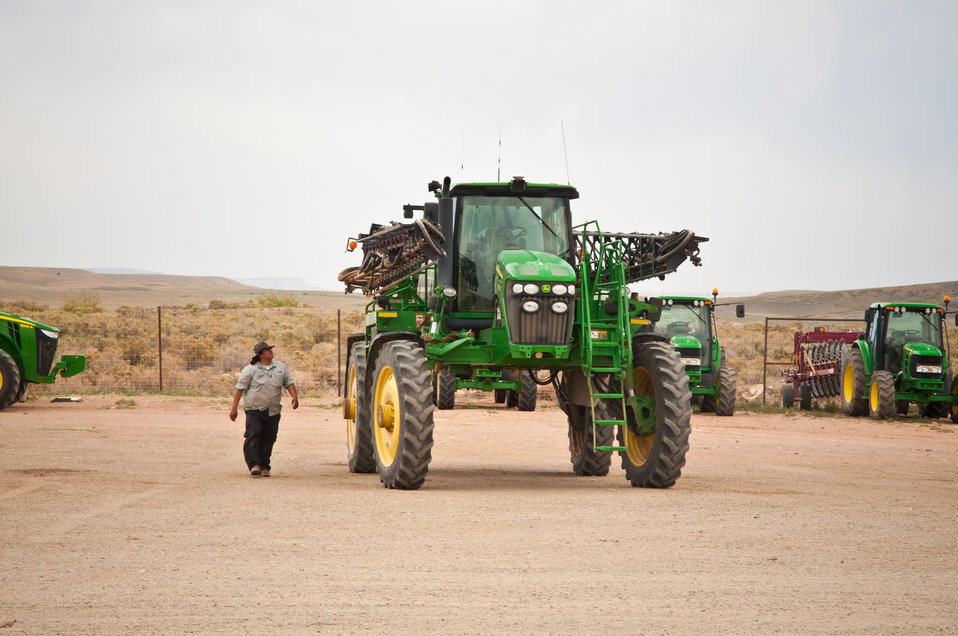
Mike Vicenti prepares farm equipment on the Ute Mountain Ute Tribe Farm and Ranch Enterprise in Towaoc, CO. This farm is a 7,770 acre modern irrigated agricultural project producing alfalfa, field corn, wheat, sunflower seed and livestock in the shadow of Sleeping Ute Mountain in Colorado. With a grant from the U.S. Department of Agriculture’s (USDA) Rural Development (RD) agency the Ute Mountain Ute Tribe Farm and Ranch Enterprise will be able to use state of the art equipment and modern technology to successfully operate a market-oriented agricultural enterprise. This will enable the tribe to maximize successful commercial ventures, develop a network of potential customers and provide skilled, year-round employment.